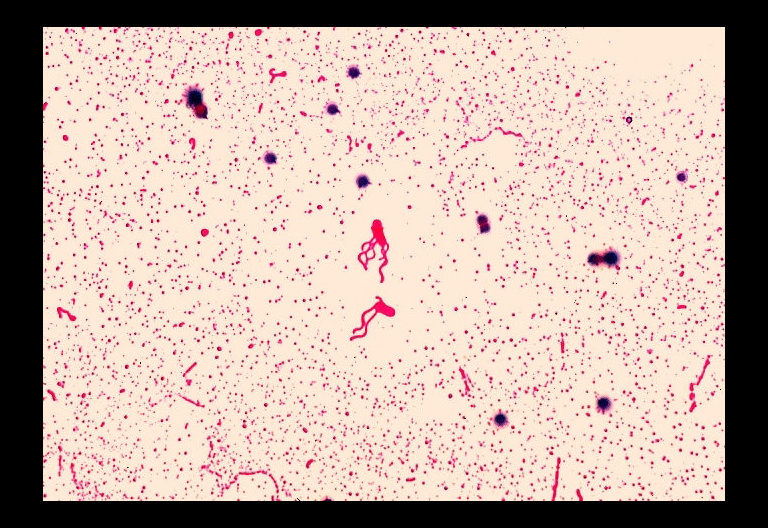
Bacillus coagulans. Leifson flagella stain.